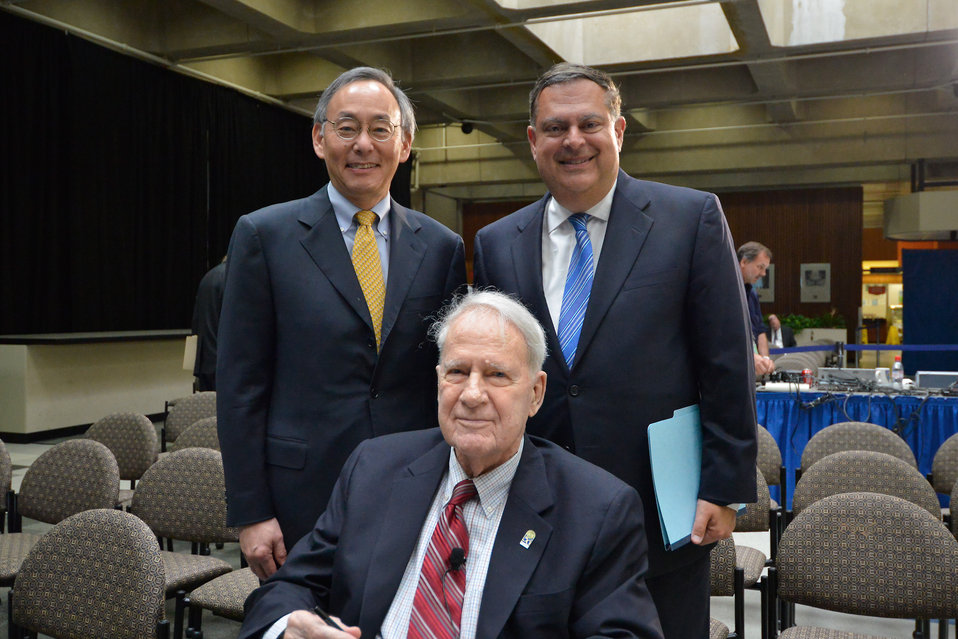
Secretaries

Secretary Chu, Secretary Schlesinger, and Secretary Abraham gather at the conclusion of the Department of Energy’s 35th Anniversary and Honors Awards ceremony on October 4, 2012.